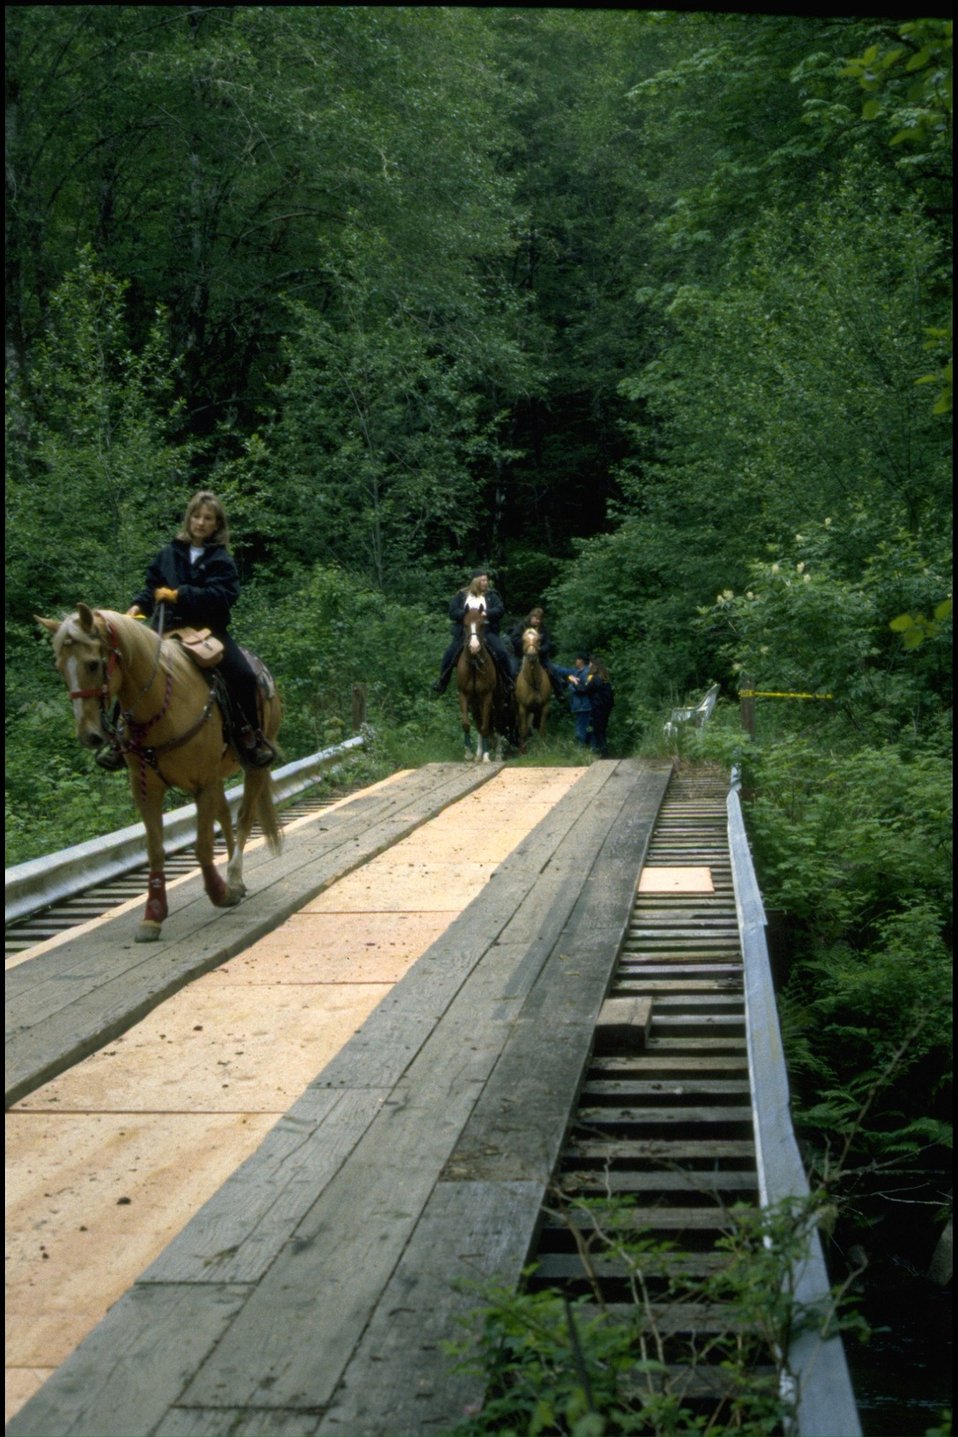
Horse Poker Ride.